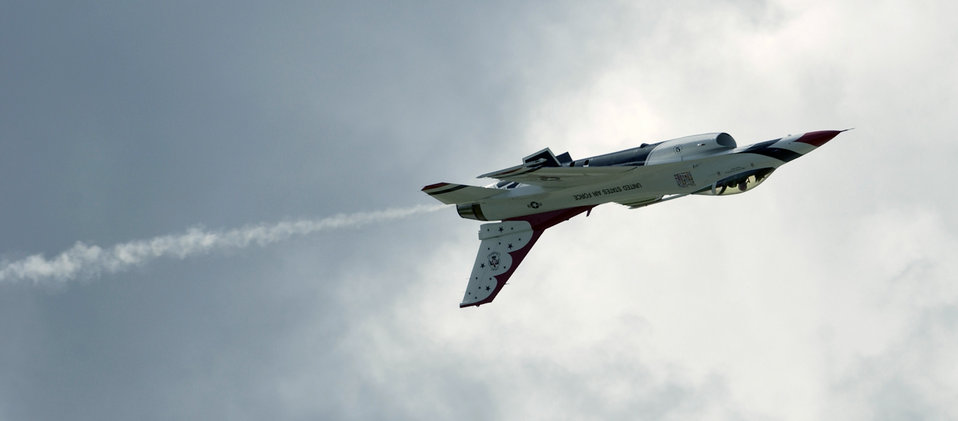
Thunderbirds

ANDERSEN AIR FORCE BASE, Guam -- The United States Air Force Demonstration Team